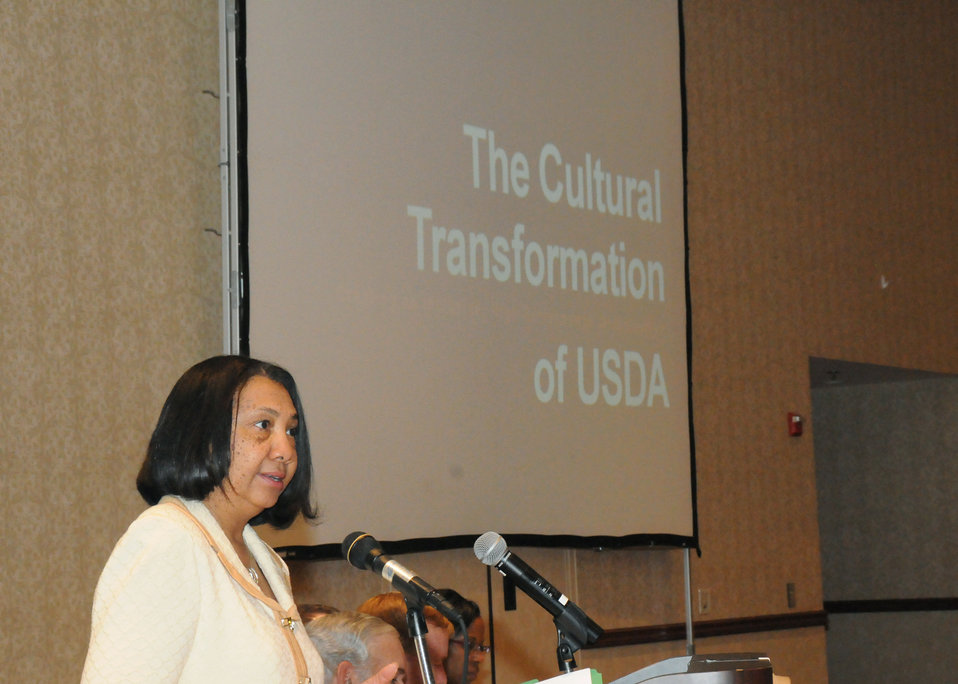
U.S. Department of Agriculture Deputy Assistant Secretary for Department Management Alma Hobbs makes opening remarks to employees at the Cultural Transformation listening session in Kansas City, MO, on Wednesday, April. 14, 2010. USDA photo 10di1308-43.